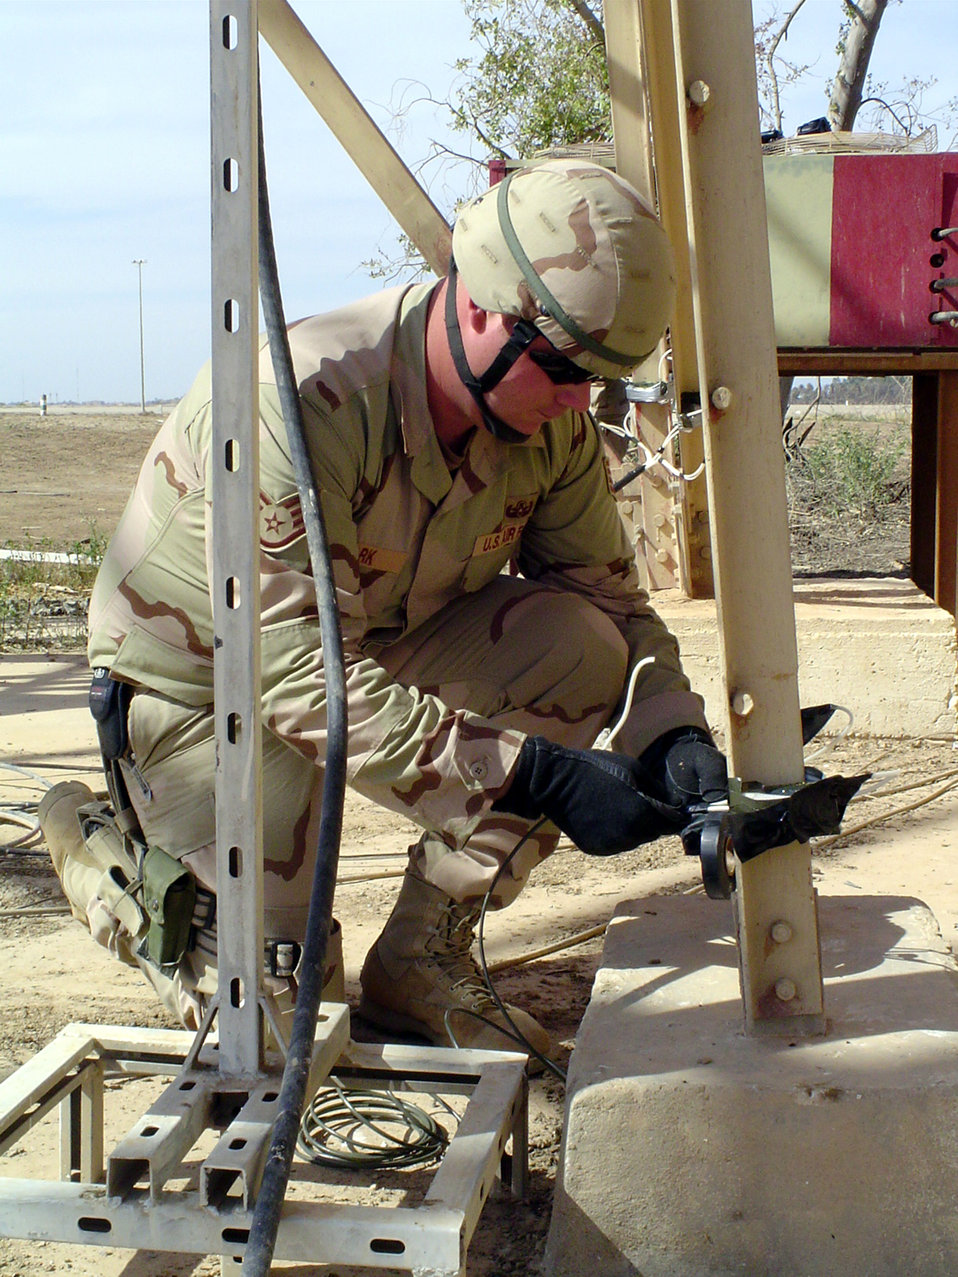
Demolition man

BAGHDAD, Iraq -- Staff Sgt. Rory Stark places charges at the base of an obsolete radar tower at Baghdad International Airport recently. The demolition makes room for a new radar tower to bring the airport up to international standards. Sergeant Stark is an explosive ordnance technician assigned to the 447th Air Expeditionary Group here.